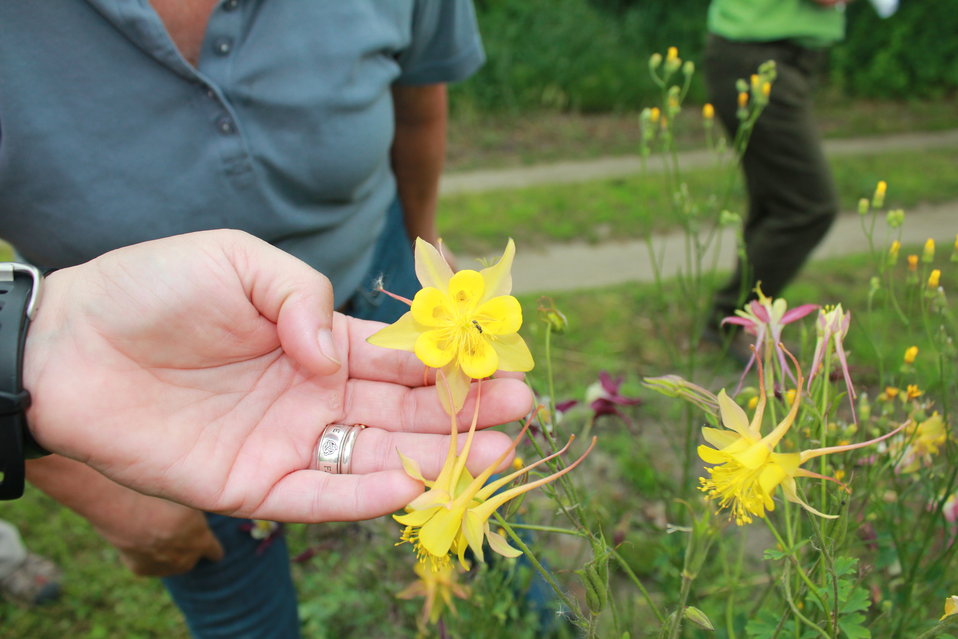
Pollinators in Hadley, MA.